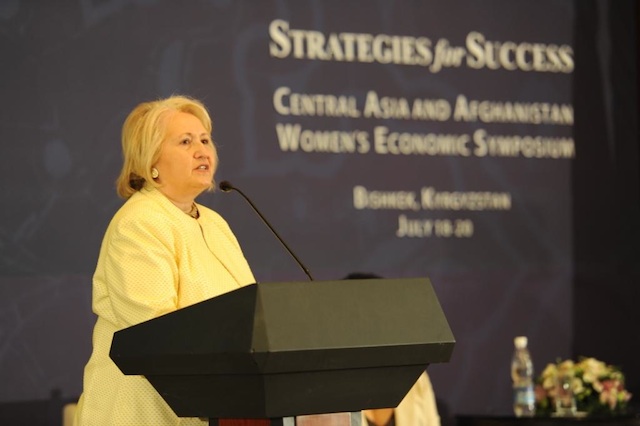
Ambassador Verveer Delivers the Keynote Address

U.S. Ambassador-at-Large for Global Women’s Issues Melanne Verveer delivers the keynote address at the Central Asia and Afghanistan Women’s Economic Symposium in Bishkek, Kyrgyzstan, on July 18, 2011.